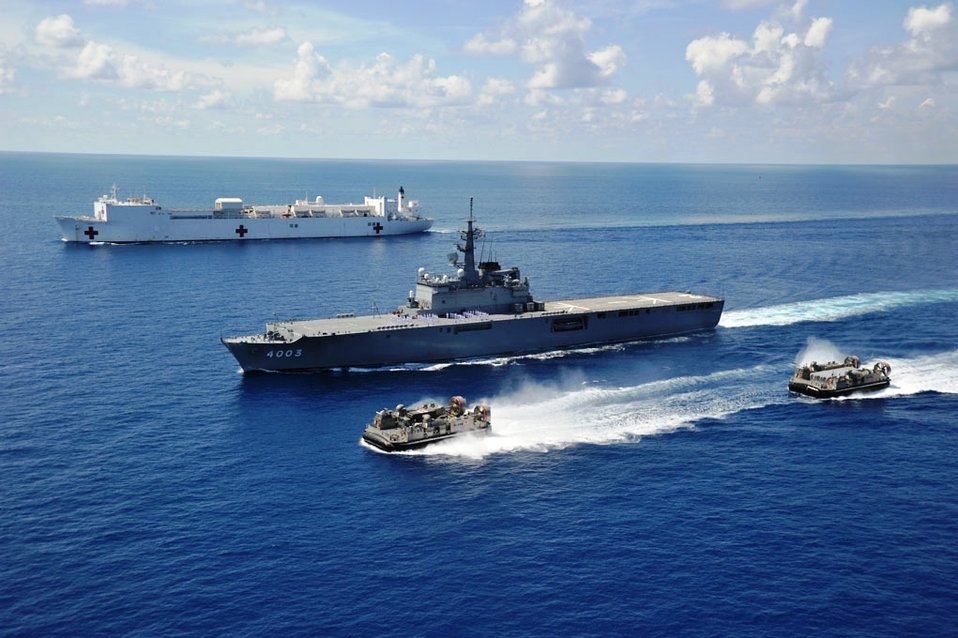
JDS Kunisaki and USNS MERCY Sail

The JDS Kunisaki, front, and the USNS MERCY, back, sail on the Pacific Ocean off the coast of Southeast Asia on June 14, 2010.